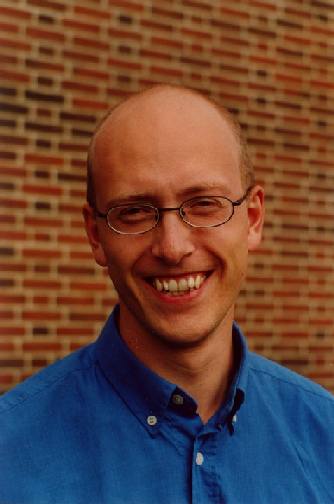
Dansk: Billede af Bruger:Heelgrasper, Jakob Øhlenschlæger